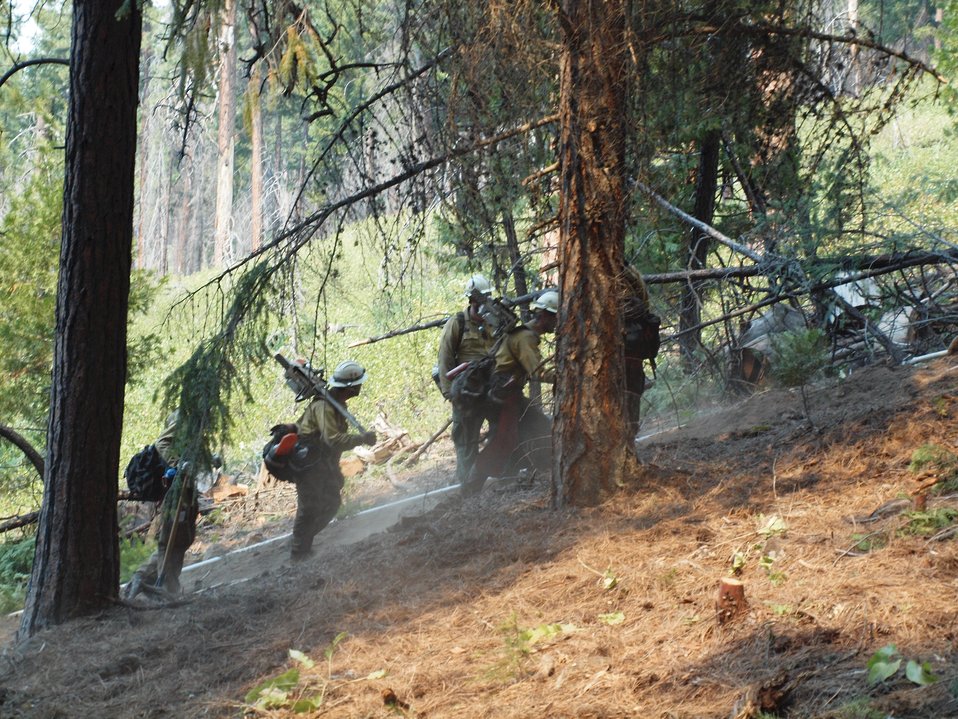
Firefighters work the fire line at the Green Ridge Fire. The Green Ridge Fire in the Deschutes National Forest near Sisters, OR began on Jul. 31, 2013 by lightning has consumed approximately 1,510 acres and is approximately 95% contained.